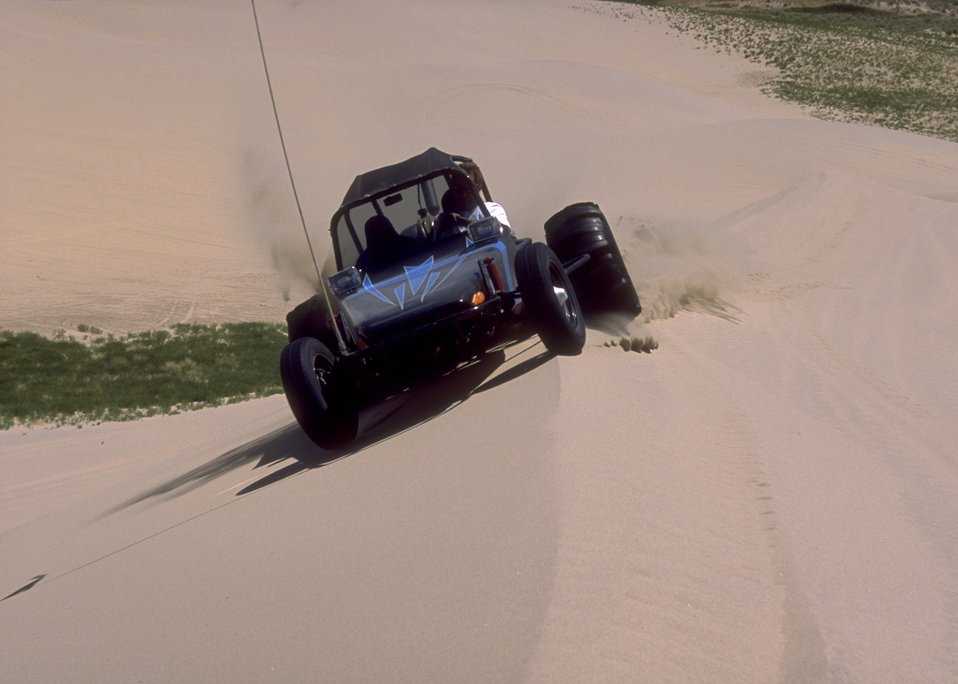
Sand Dunes OHV Area, RSFO.